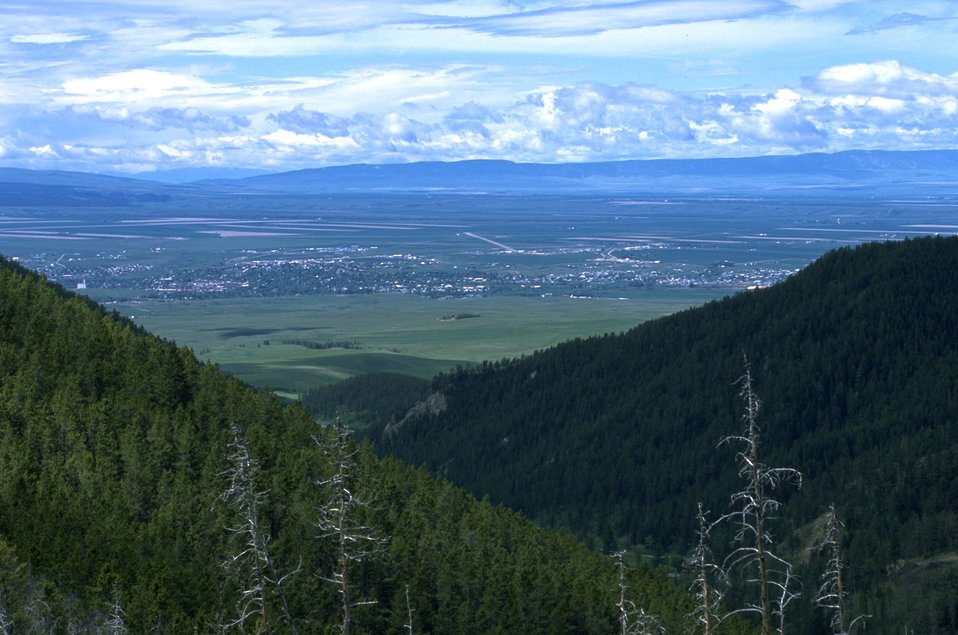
View of Lewistown MT taken from the Judith Mountains